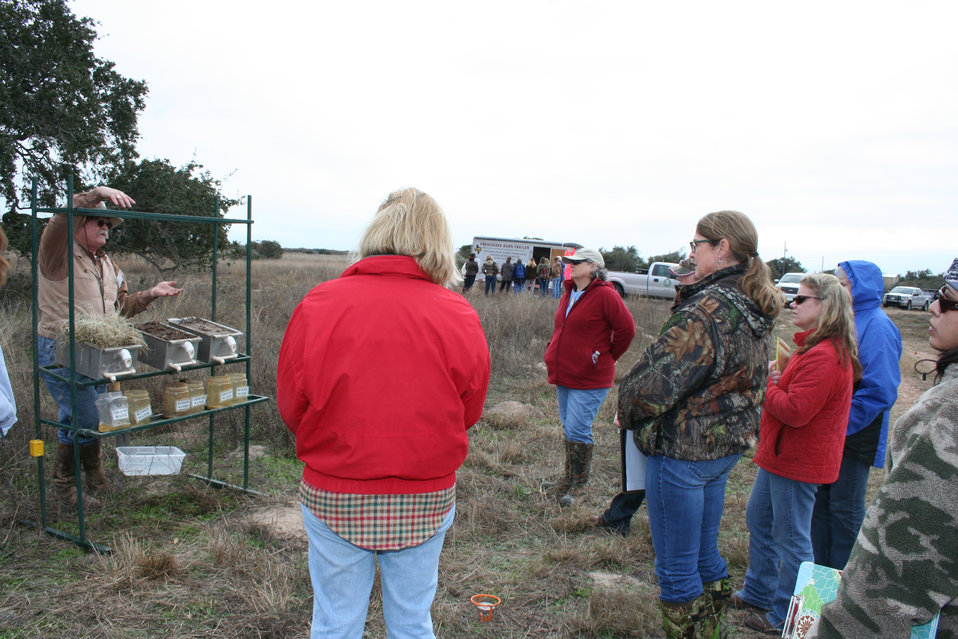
U.S. Department of Agriculture (USDA) Natural Resource Conservation Service (NRCS) rangeland management specialist Stephen Deiss shares with Women of the Land attendees about the importance of cover on rangeland and its benefits to prevent erosion and improve groundwater.